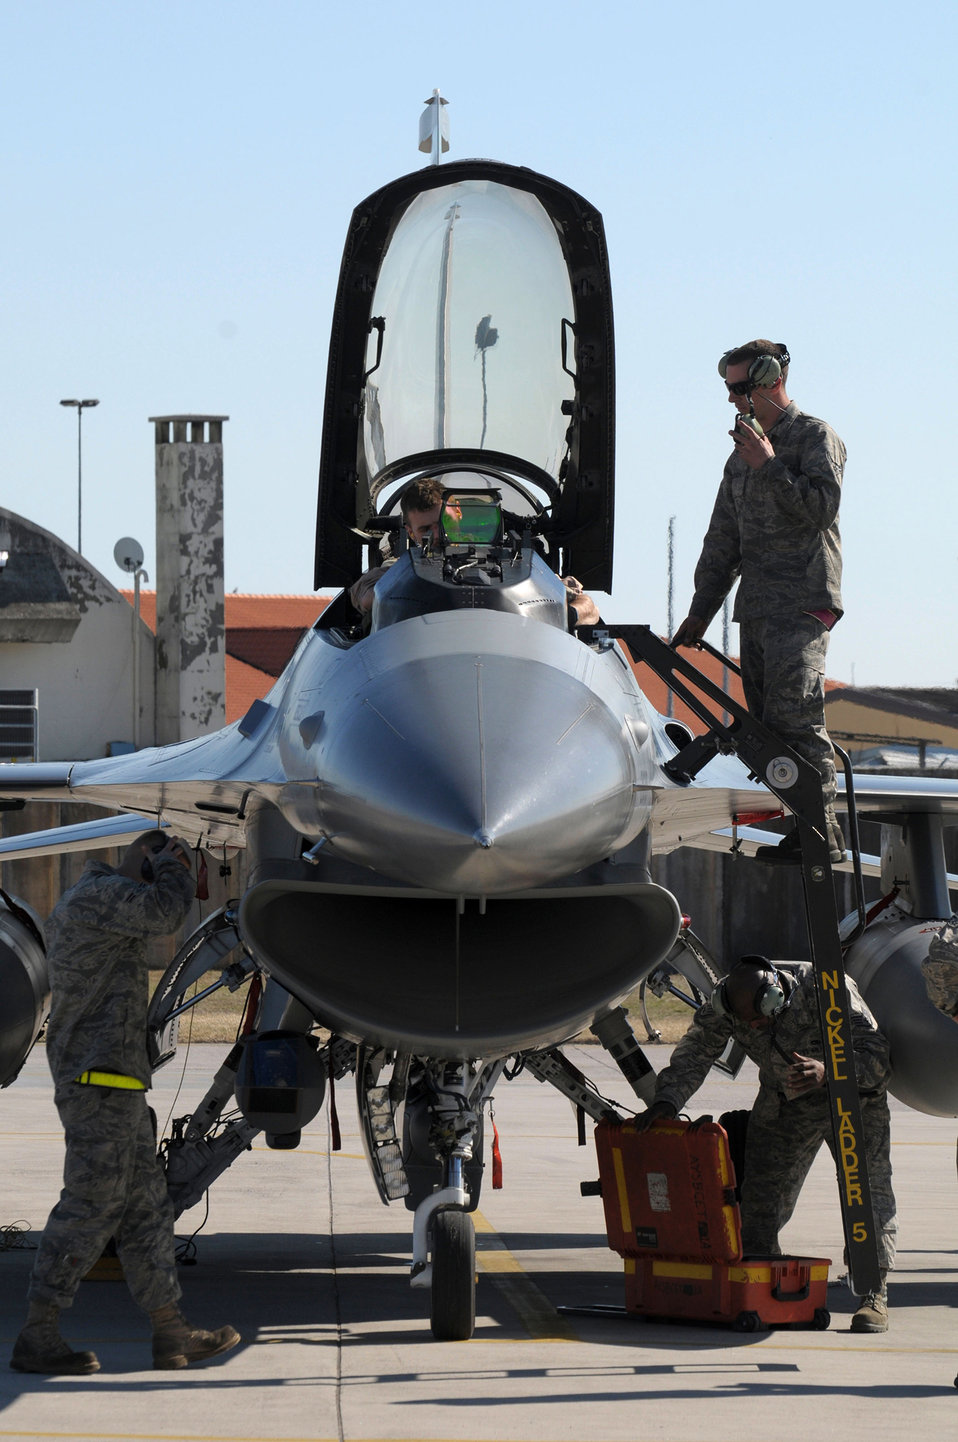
Odyssey Dawn

U.S. Air Force F-16 Fighting Falcon flight crew members perform post-flight checks on Aviano Air Force Base, Italy, after the F-16 pilot returns from supporting Joint Task Force Odyssey Dawn on March 20, 2011. Joint Task Force Odyssey Dawn is the U.S. Africa Command task force established to support the larger international response to the unrest in Libya. A broad coalition of nations are partnering to enforce U.N. Security Council Resolution (UNSCR) 1973, which authorizes all necessary means to protect civilians in Libya under threat of attack by Qadhafi regime forces. JTF Odyssey Dawn is commanded by Admiral Samuel J. Locklear, III.